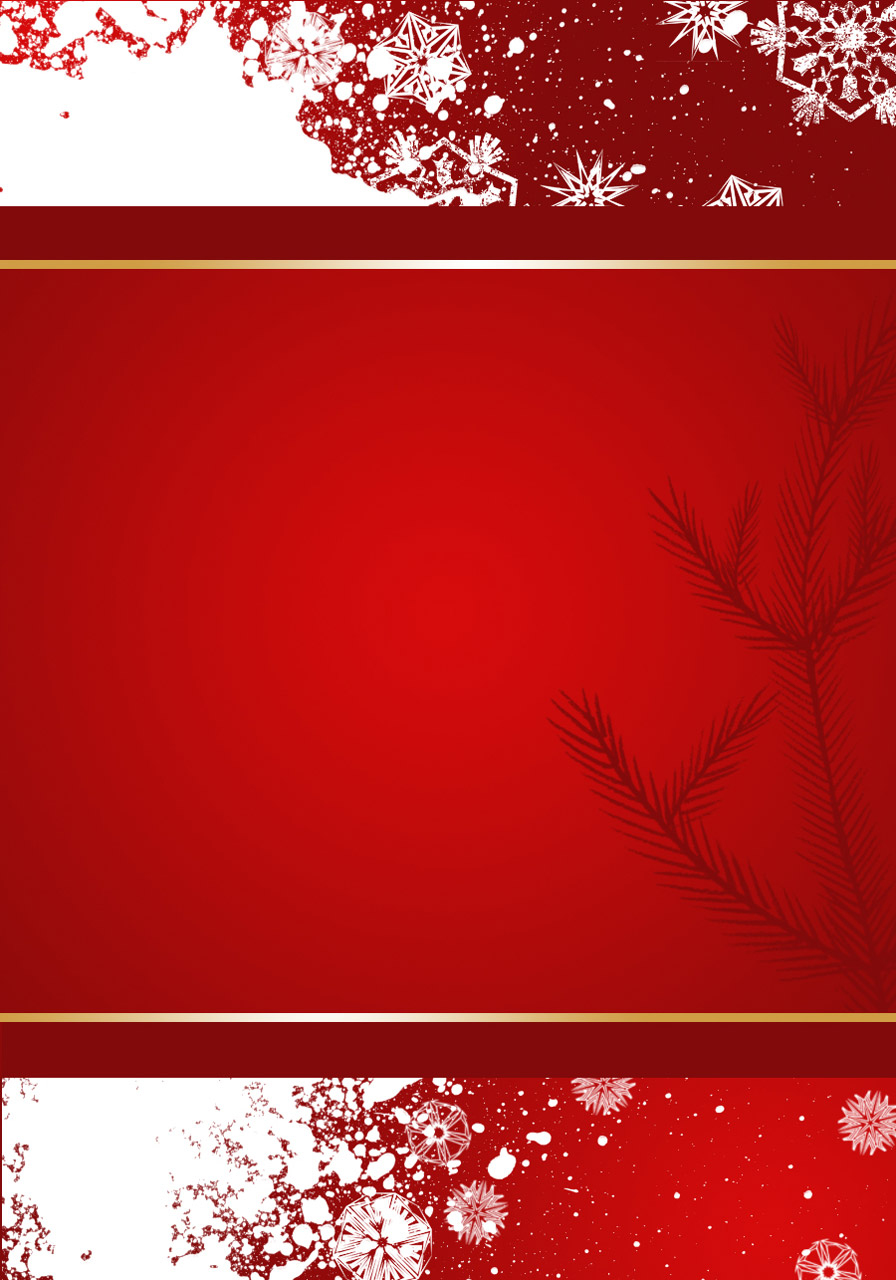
Christmas background iii

Dark red christmas background with snowflakes.